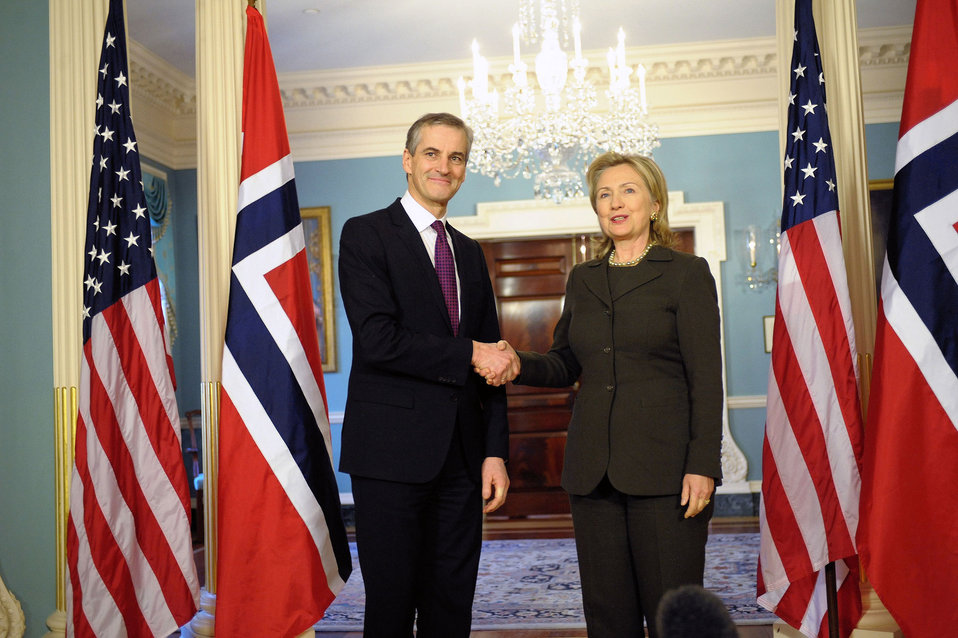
Secretary Clinton Shakes Hands With Norwegian Foreign Minister Stoere

U.S. Secretary of State Hillary Rodham Clinton shakes hands with Norwegian Foreign Minister Jonas Gahr Stoere after their bilateral meeting at the U.S. Department of State in Washington, D.C., on December 7, 2010.